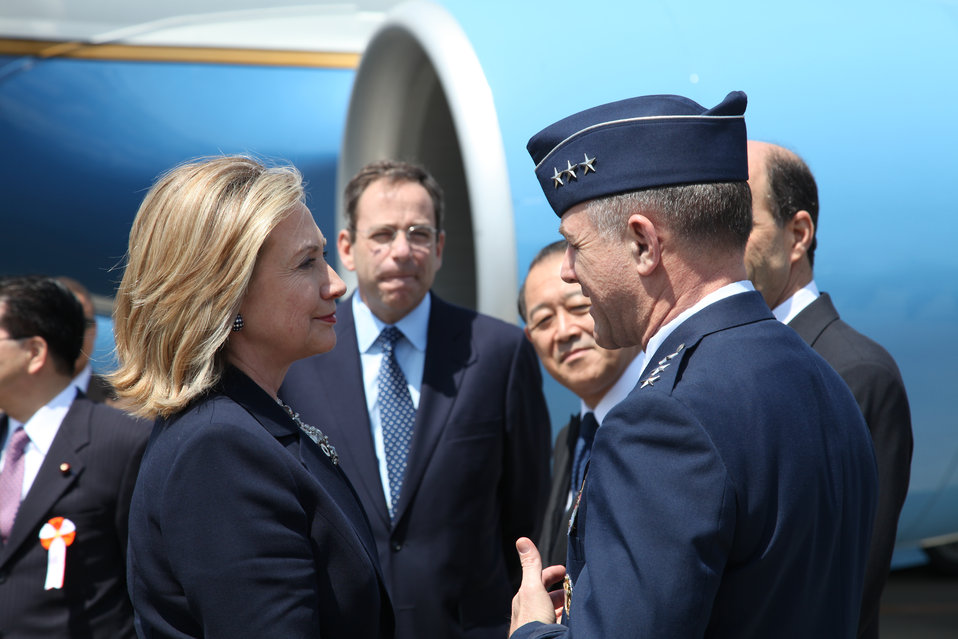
Secretary Clinton Speaks With Lieutenant General Field

U.S. Secretary of State Hillary Rodham Clinton speaks with Lieutenant General Burton Field, Commander of U.S. Forces Japan (USFJ), upon her arrival in Tokyo, Japan, on April 17, 2011.